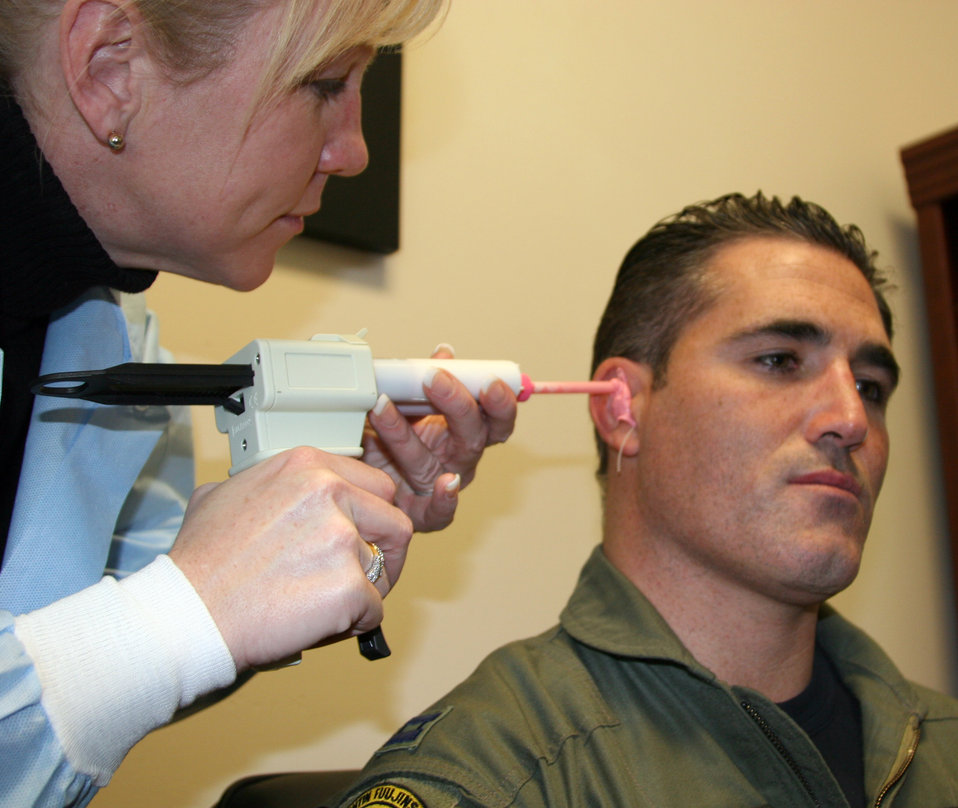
Hearing protection

HILL AIR FORCE BASE, Utah -- Master Sgt. Crystal Martin makes a mold of Capt. Dax Cornelius' inner ear. The mold will be used to make a new earplug system for the 4th Fighter Squadron demonstration team member. Sergeant Martin is with the 75th Aerospace Medicine Squadron.